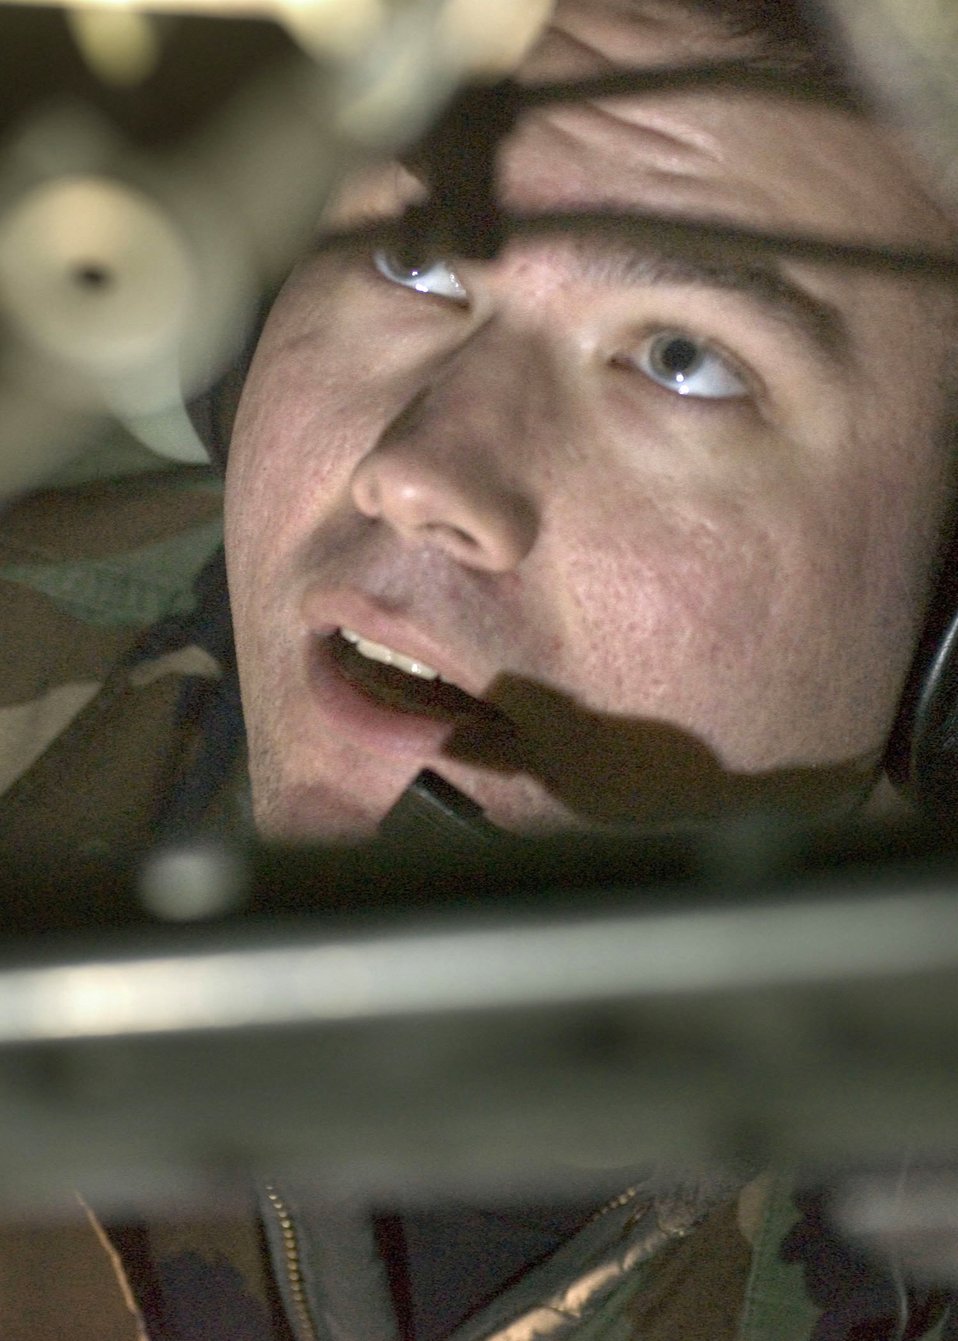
All night long

RAMSTEIN AIR BASE, Germany -- Staff Sgt. David Bell searches for the cause of a throttling problem with a C-130 Hercules engine here. Sergeant Bell is an engine mechanic on the night shift assigned to the 86th Aircraft Maintenance Squadron.